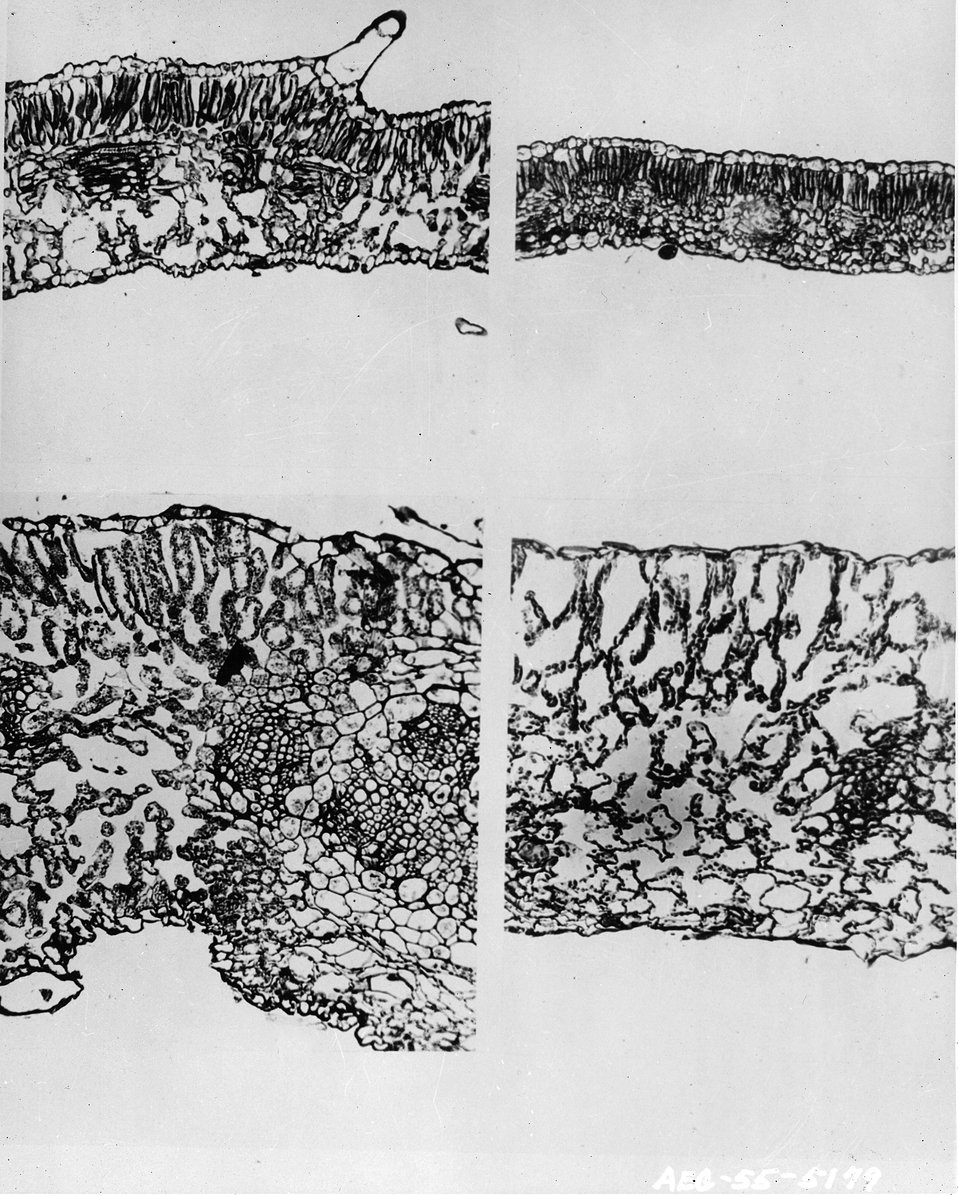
The effect of nuclear radiation on leaves of tobacco plants is shown in cross sections seen under microscope at Brookhaven National Laboratory. c. 1955